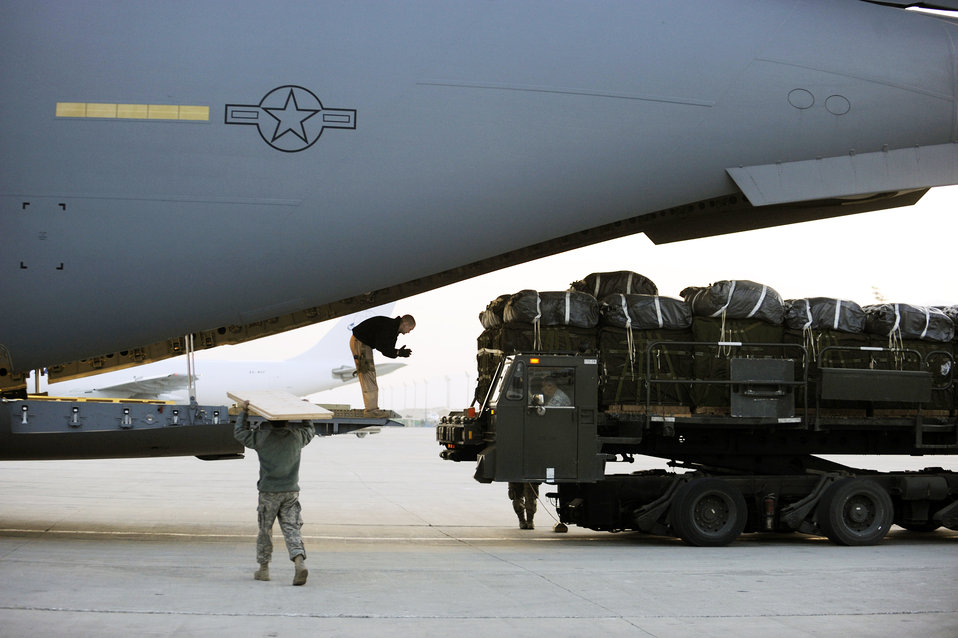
Combat air delivery over Afghanistan

Staff Sgt. Chris Rapp guides a cargo-loader driver toward the aircraft's ramp Feb. 1, 2010, at Bagram Air Base, Afghanistan. Airmen and Soldiers loaded 40 pallets of food and water to be air delivered to U.S. and coalition forces in remote areas of Afghanistan. Sergeant Rapp is a C-17 Globemaster III loadmaster assigned to the 816th Expeditionary Airlift Squadron.